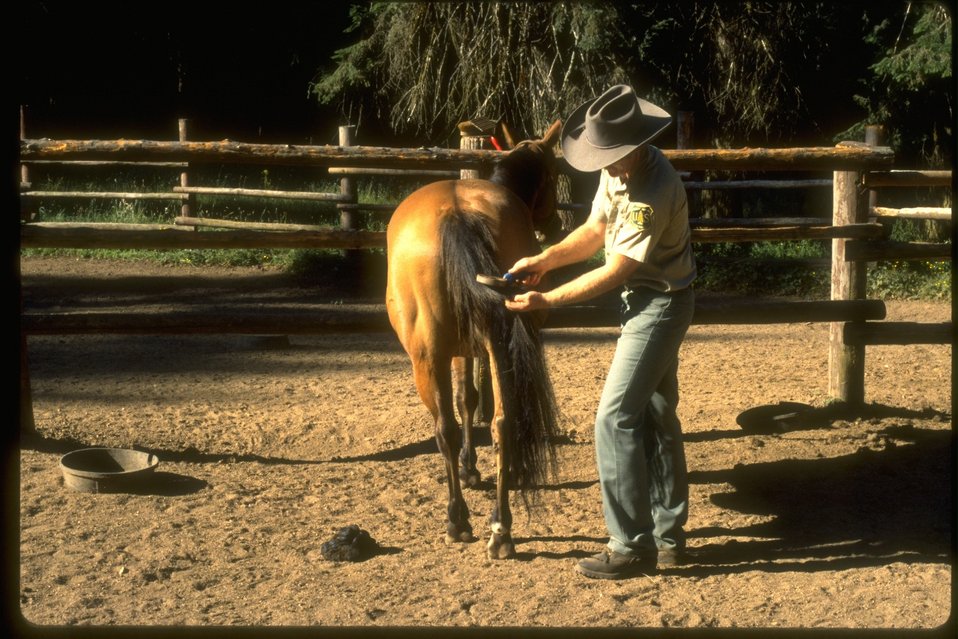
Forest Service employee brushing spotted knapweed weed from a horses tail in the Sellway Bitteroot wilderness of Idaho.